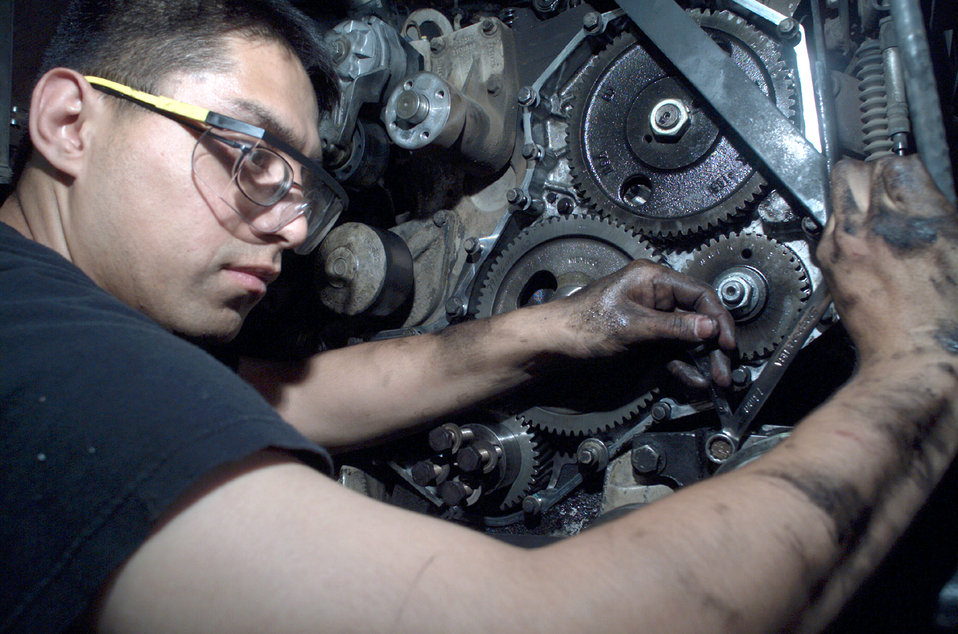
Taking care of business

DAVIS-MONTHAN AIR FORCE BASE, Ariz. -- Senior Airman Luis Celaya replaces the air-conditioning compressor on a 44-passenger bus. He is a general purpose vehicle technician with the 355th Logistics Readiness Squadron here.